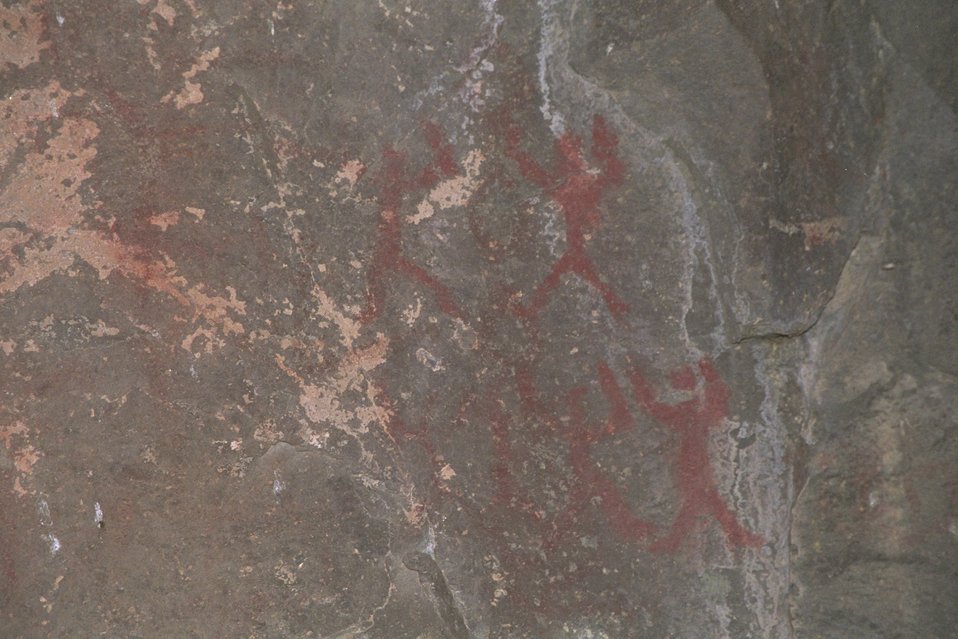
Rock paintings near the takeout at the end of section 2 in the John Day River.